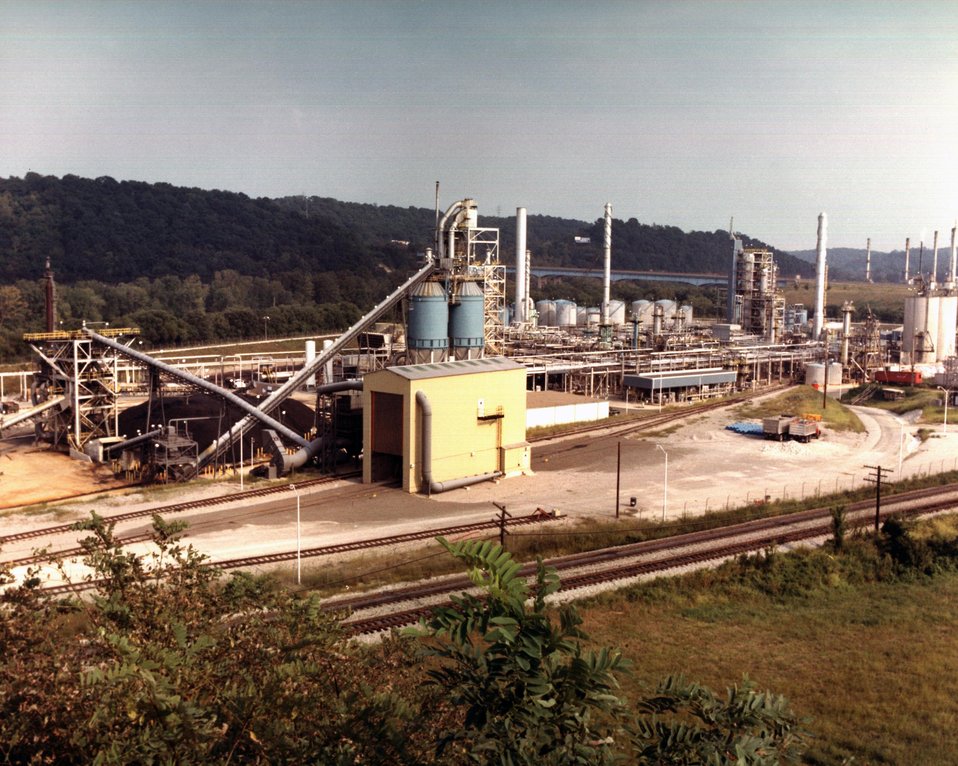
AN OVERALL VIEW OF H-COAL PILOT PLANT WITH COAL RECEIVING AND STOCK-PILE AREA AT LEFT.